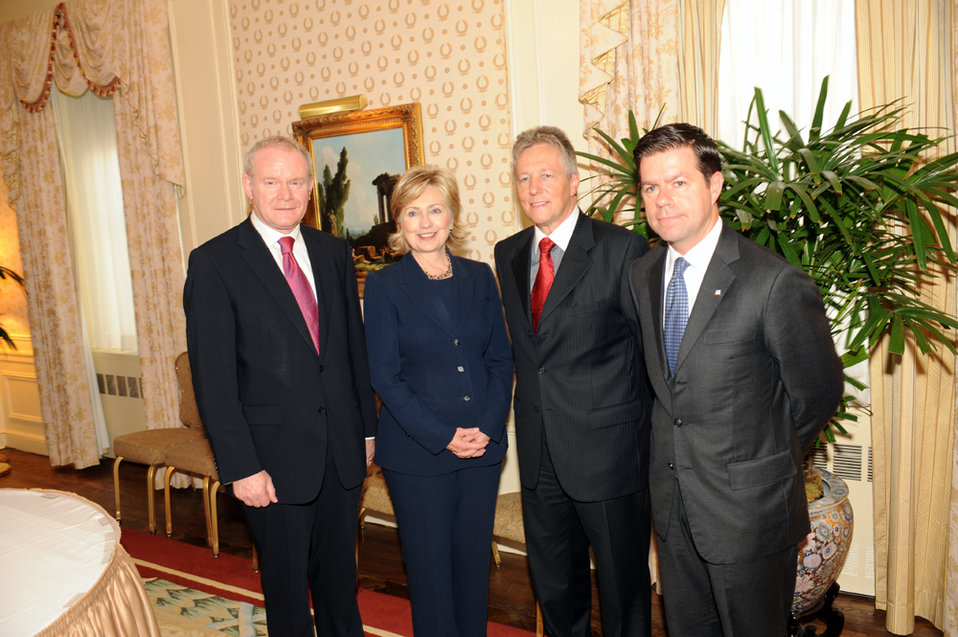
UNGA 2009: U.S.-Northern Ireland Joint Meeting

U.S. Secretary of State Hillary Rodham Clinton poses with Northern Ireland officials during a U.S.-Northern Ireland joint meeting at the Waldorf Astoria hotel during the 64th Session of the UN General Assembly in New York City, New York September 24, 2009.